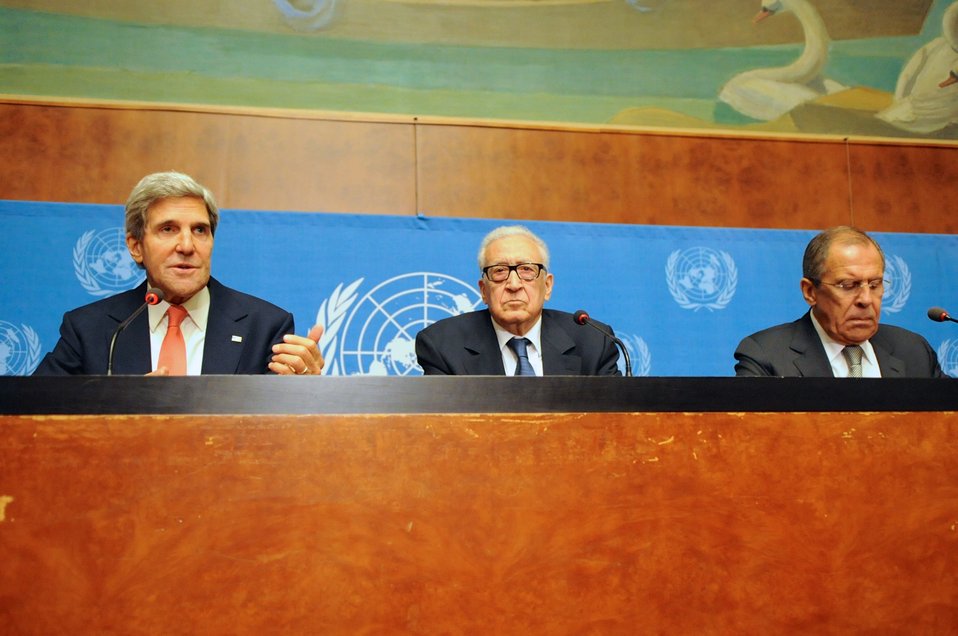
Secretary Kerry, UN Special Envoy Brahimi, Foreign Minister Lavrov Hold News Conference

10:56 a.m., September 13, 2013 - U.S. Secretary of State John Kerry, United Nations Special Envoy for Syria Lakhdar Brahimi, and Russian Foreign Minister Sergey Lavrov speak to reporters after a meeting at UN headquarters in Geneva focused on reaching a political solution to the Syrian civil war.